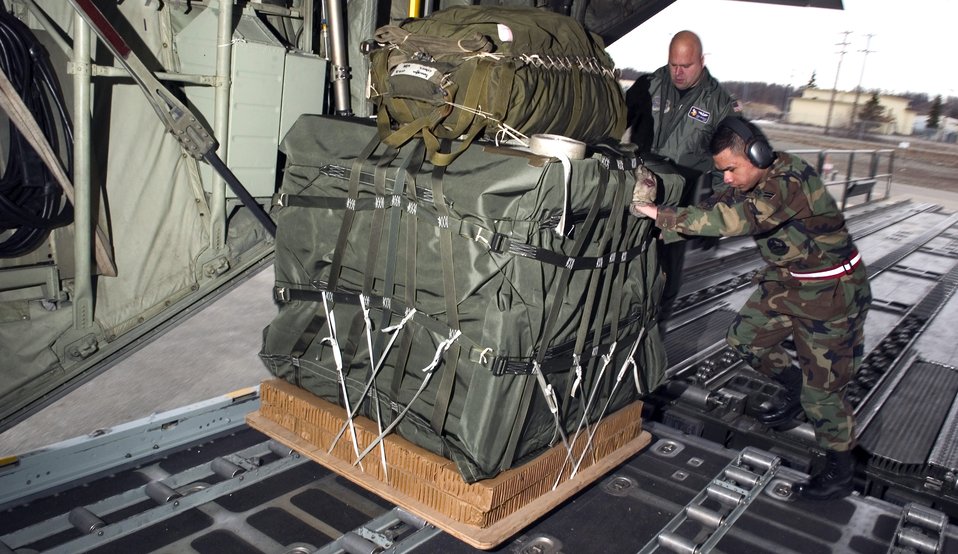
Reserve wing, Army unit join forces at Red Flag-Alaska

Senior Airman Marvin Poquiz and Tech. Sgt. Chuck Brynteson load container delivery systems onto a C-130 Hercules at Elmendorf Air Force Base, Alaska, as part of Red Flag-Alaska 06-2 exercises on Friday, April 28, 2006. Poquiz is with the 732nd Air Mobility Squadron at Elmendorf. Sergeant Brynteson is with the 96th Airlift Squadron at Minneapolis-St. Paul Joint Air Reserve Station, Minn.